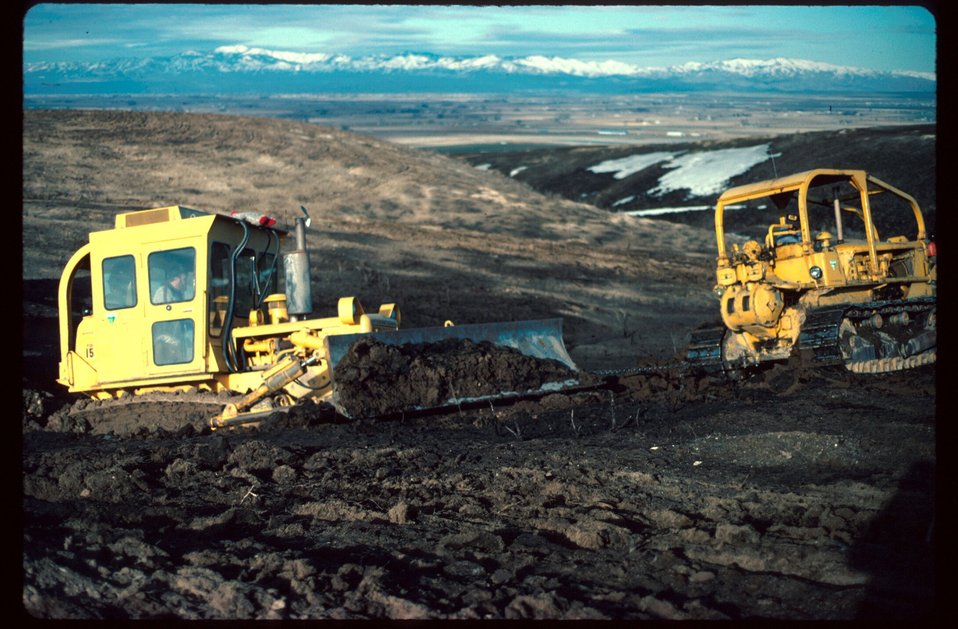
Range Restoration Project